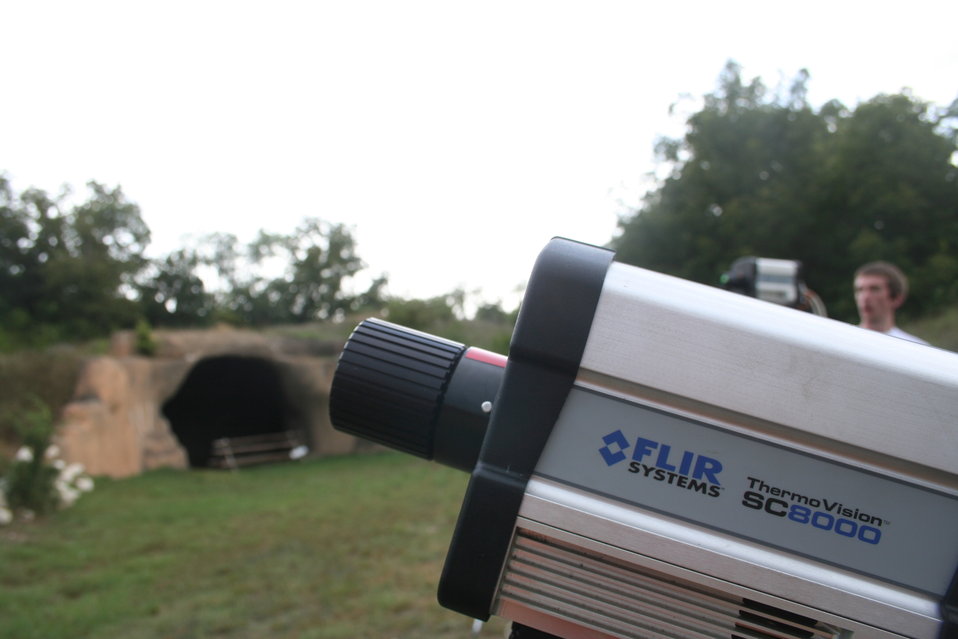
Setting the cameras